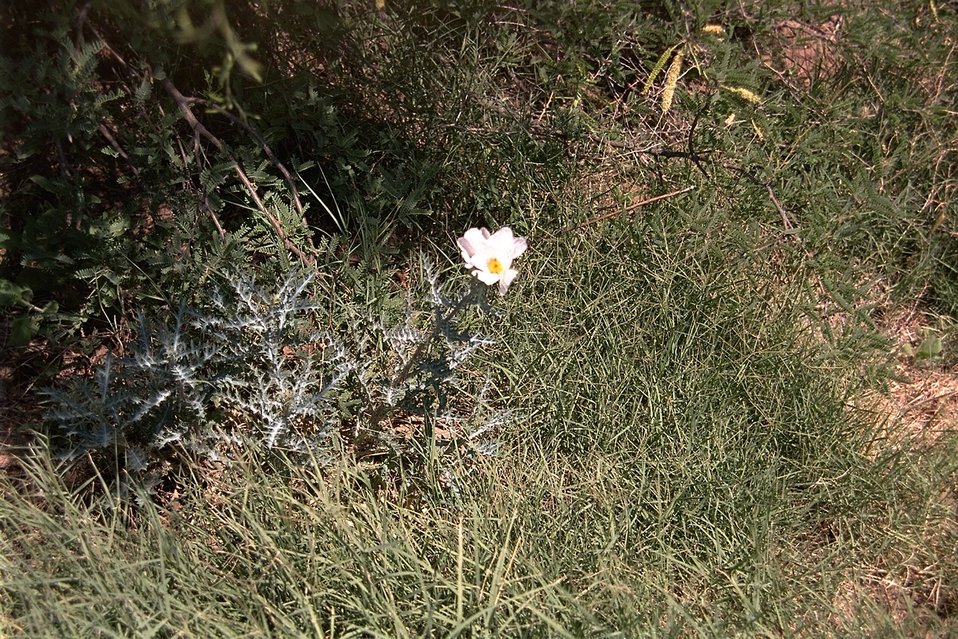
A single, white wildflower amongst desert weeds.